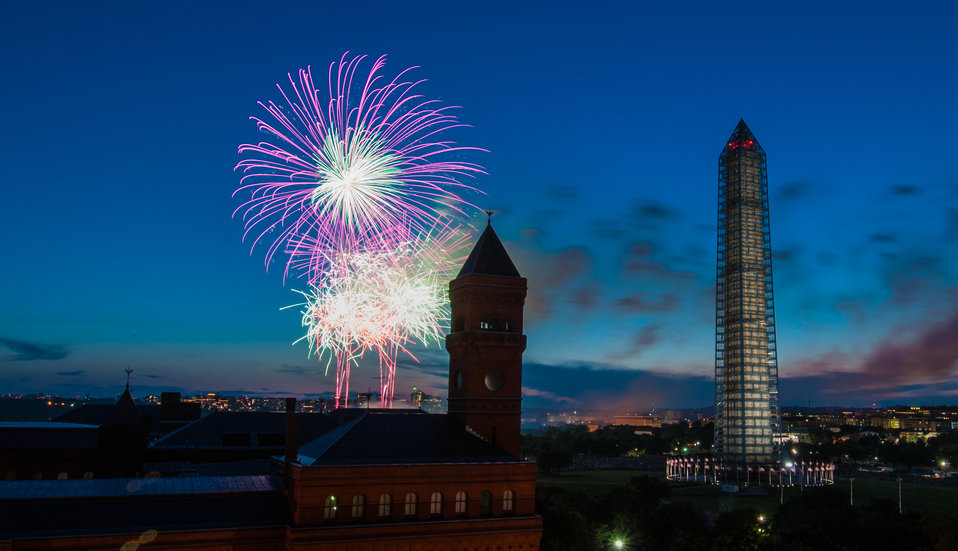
4th of July fireworks as seen from the U.S. Department of Agriculture (USDA) headquarters building, with the USDA Forest Service Yates Building in the foreground, left, and the Washington Monument in Washington, D.C., on July 4, 2013.